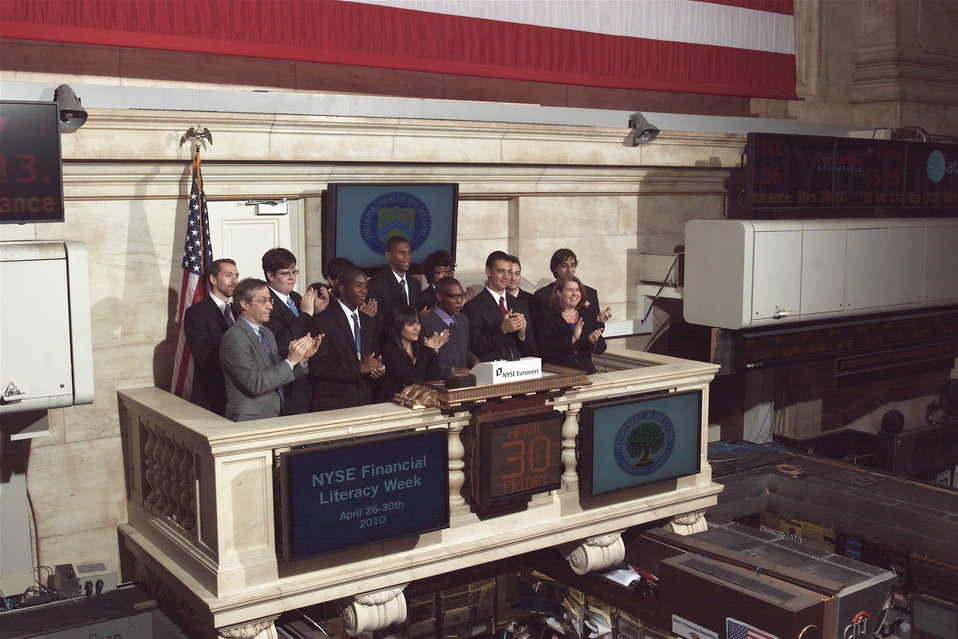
New York Stock Exchange, 4/30/2010

The delegation visiting the NYSE today is comprised of students and educators from the New York/New Jersey/Connecticut area, joined by Michelle Greene, Deputy Assistant Secretary for Financial Education and Financial Access, U.S. Department of the Treasury.